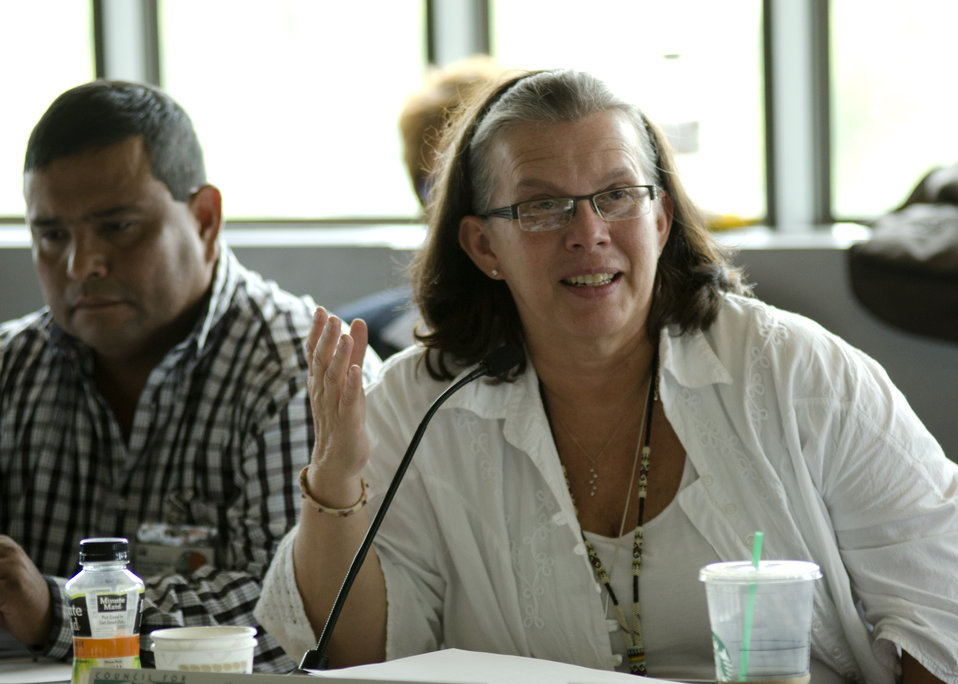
U.S. Department of Agriculture (USDA) Senior Advisor to the Secretary for Tribal Relations Janie Simms Hipp, Chickasaw Nation, speaks at the conclusion of the first business meeting of USDA’s Council for Native American Farming and Ranching (CNAFR) held at the National Museum of the American Indian in Washington, D.C., on Wednesday, Aug. 15, 2012. CNAFR was created to advise the Secretary on ways to eliminate barriers to participation for Native American Farmers and Ranchers in USDA programs. The Council was established as part of the Keepseagle settlement, and is conducted under the oversight of USDA's Office of Tribal Relations under the Office of the Secretary of Agriculture.